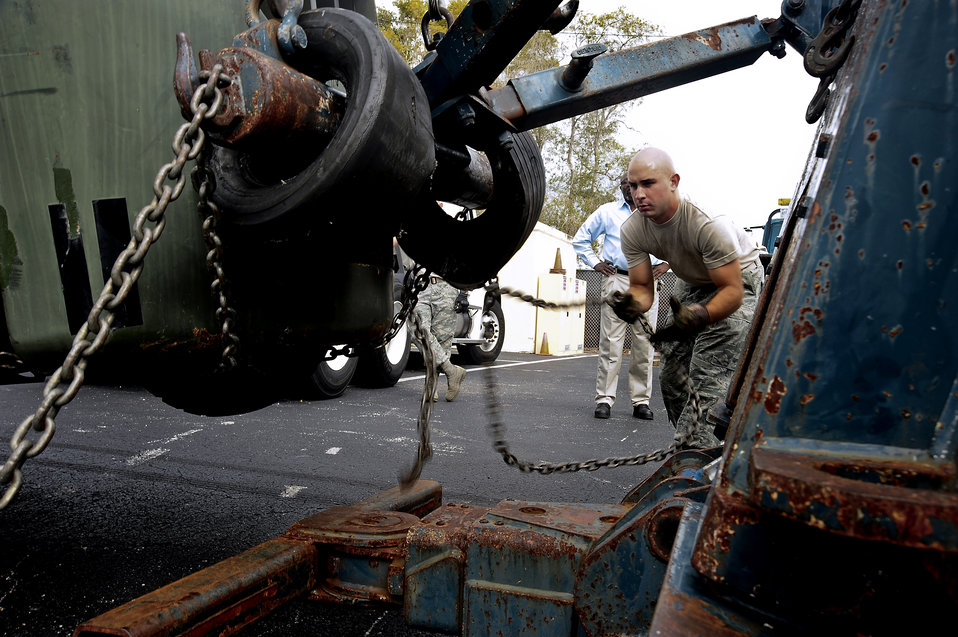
Pulling his chain

Airman 1st Class Eduardo Flores unravels a chain from a tow truck securing a forklift June 29, 2011, at MacDill Air Force Base, Fla. Airman Flores is a vehicle operator assigned to the 6th Logistics Readiness Squadron.